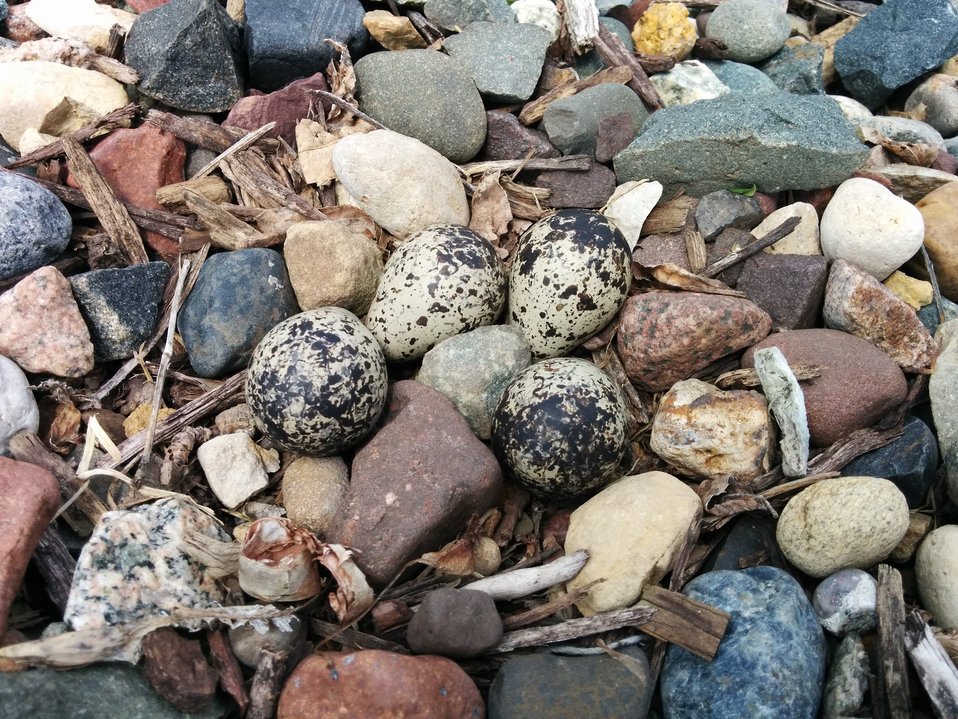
Killdeer Nest